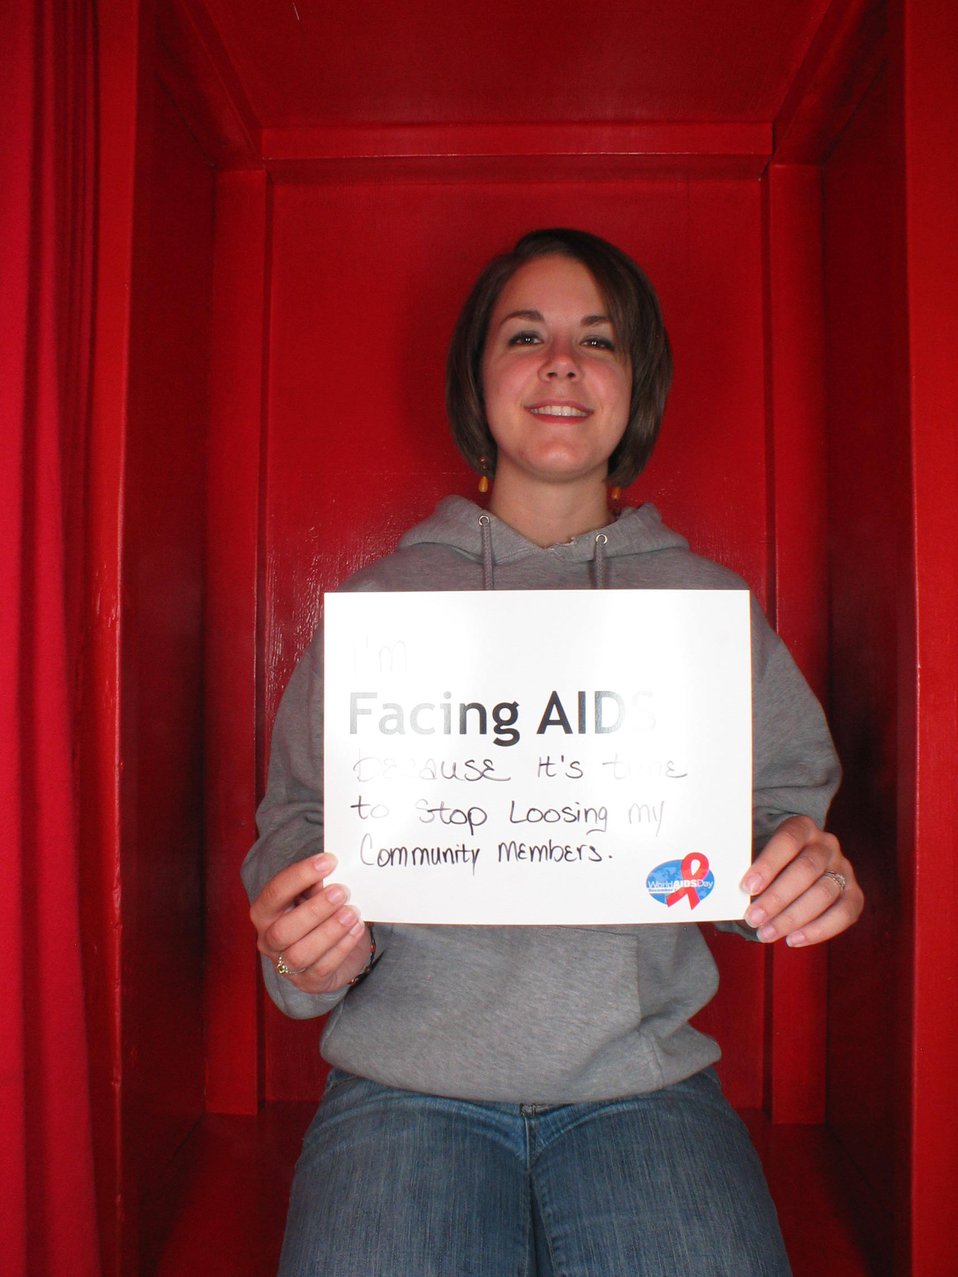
Facing AIDS because its time to stop loosing my community members.